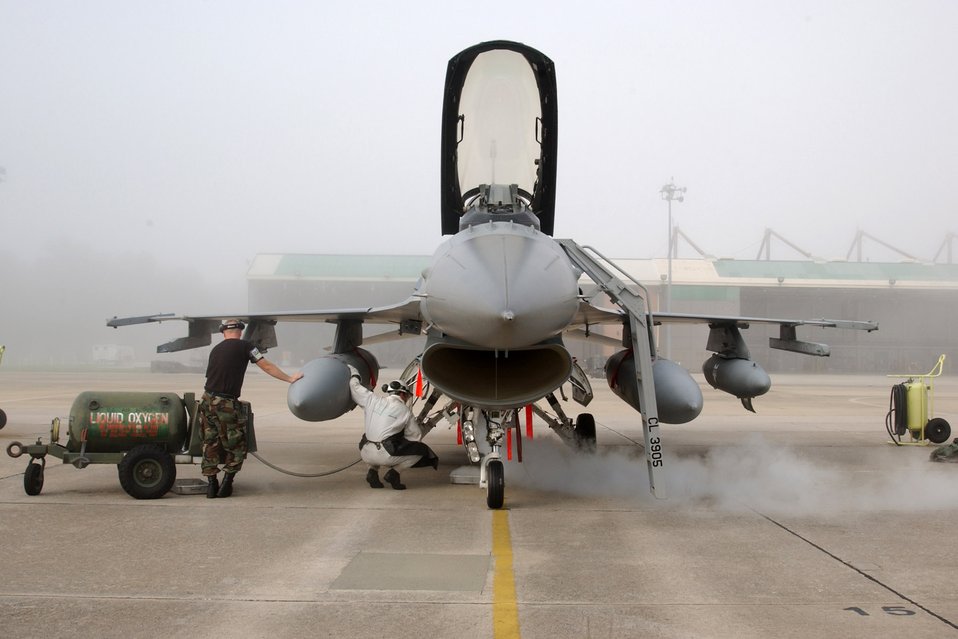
Guard support

Tech. Sgt. Jason Pry (left) and Senior Airman Justin Butler fill the liquid oxygen tank on an F-16 Fighting Falcon in preparation for takeoff from McEntire Air National Guard Base, S.C., Aug. 28. Members of the 169th Fighter Wing are filling an air expeditionary force role for Pacific Air Forces. The Airmen are assigned to the 169th Maintenance Squadron.